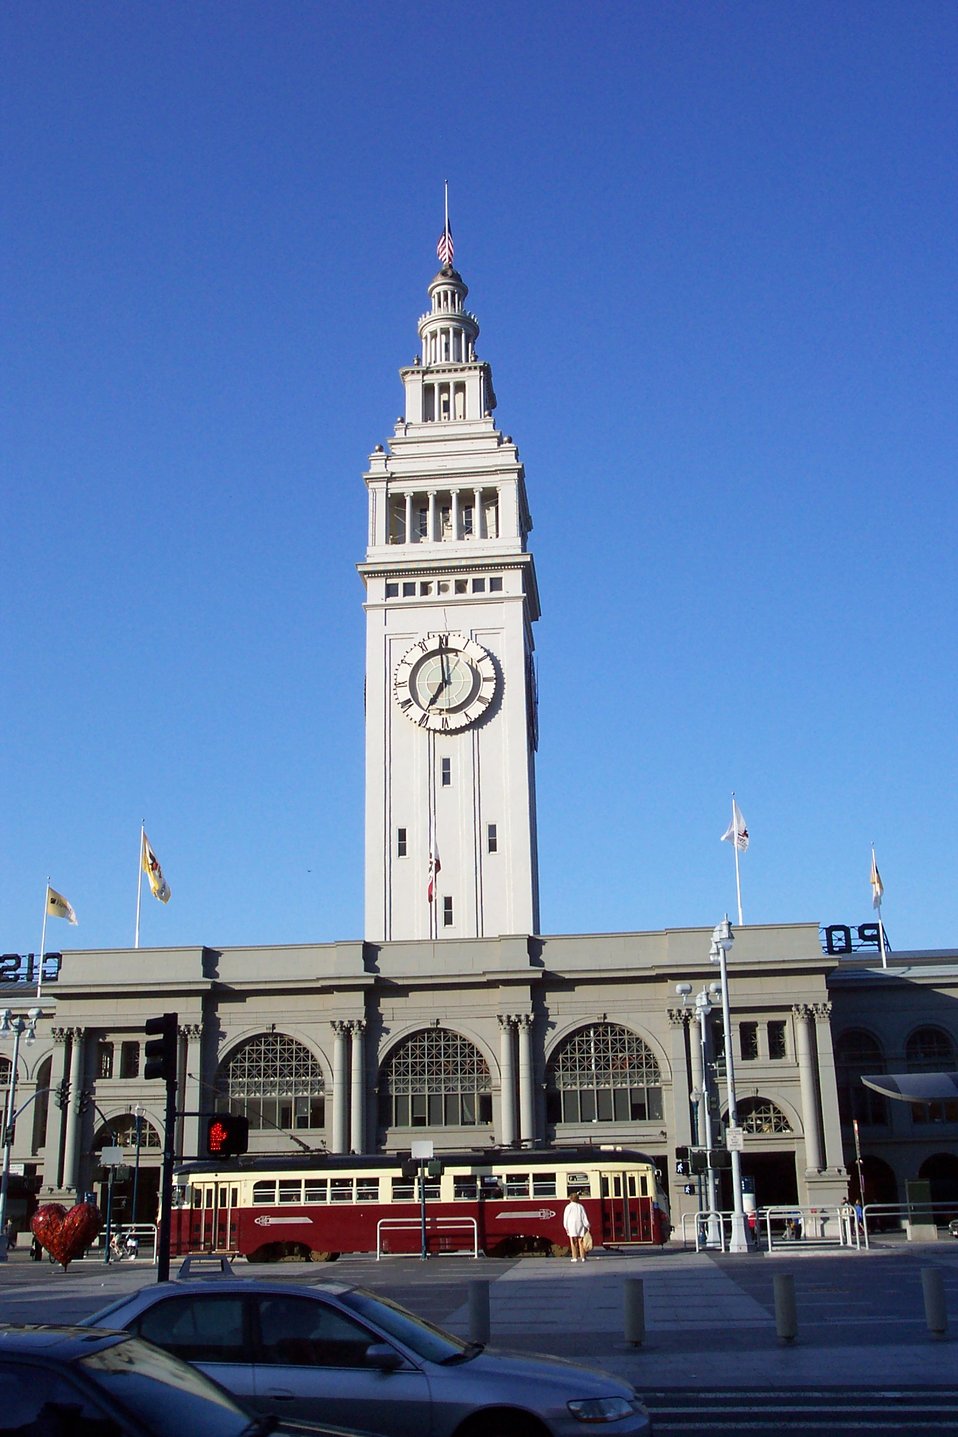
The Ferry Building - a San Francisco landmark along the Embarcadero.